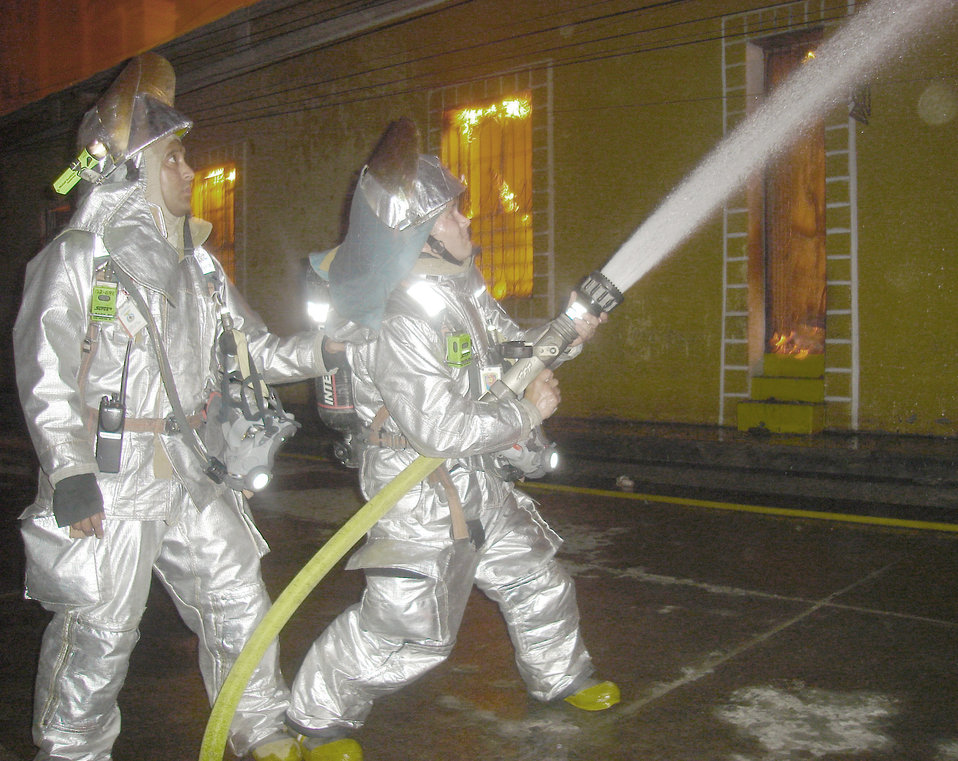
Soto Cano members battle devasting blaze

Joint Task Force-Bravo firefighters Staff Sgt. Peter Franko (left) and Senior Airman Daniel Meginness work to supress a fire April 15 in Comayagua, Honduras. Seven JTF-B firefighters responded to assist the Comayagua Fire Department with the blaze that erupted near the central plaza around 8 p.m.